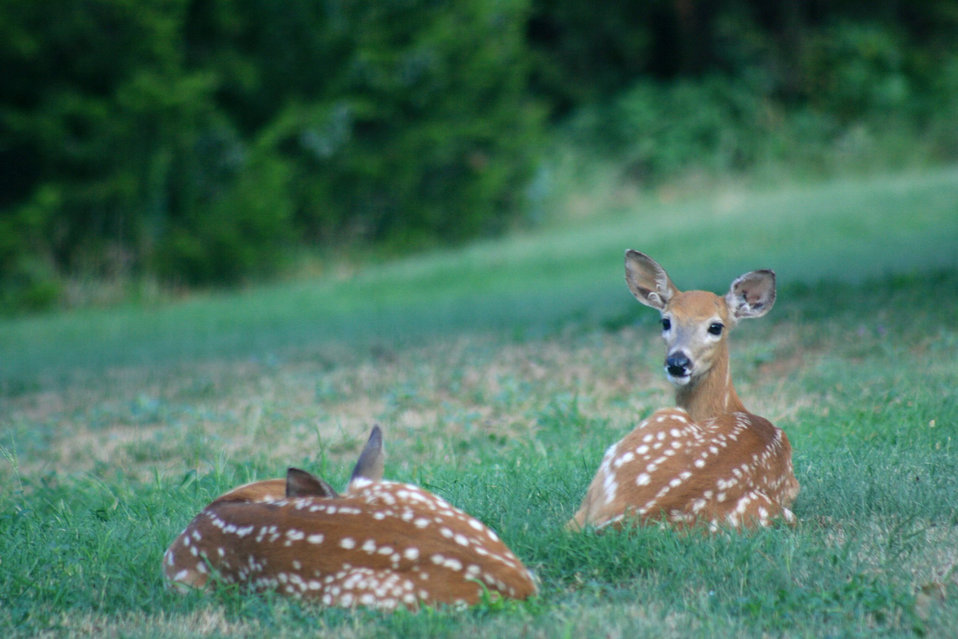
fawns

Washita National Wildlife Refuge, OK